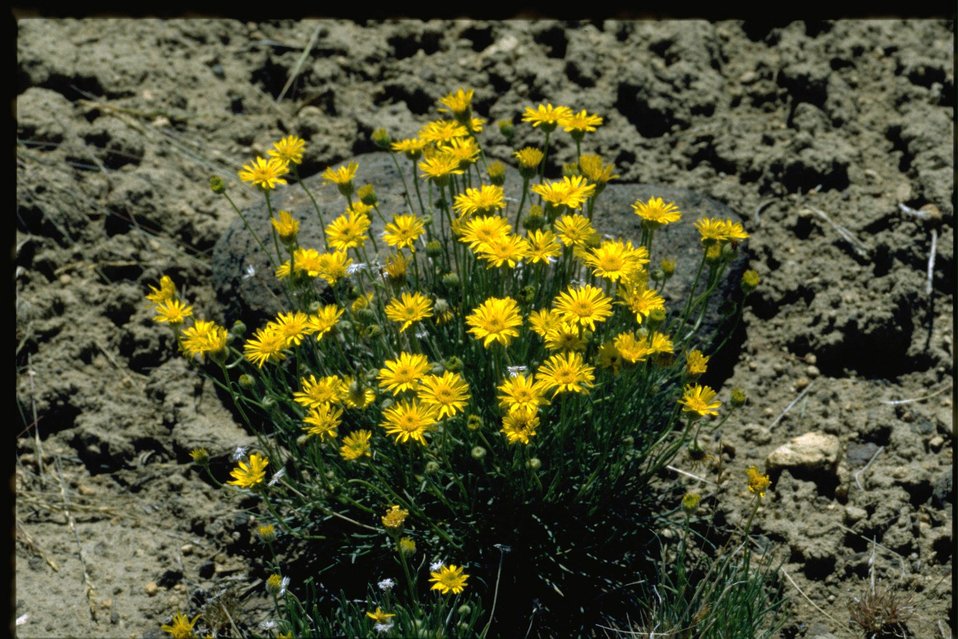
Medium shot of balsamroot habitat.